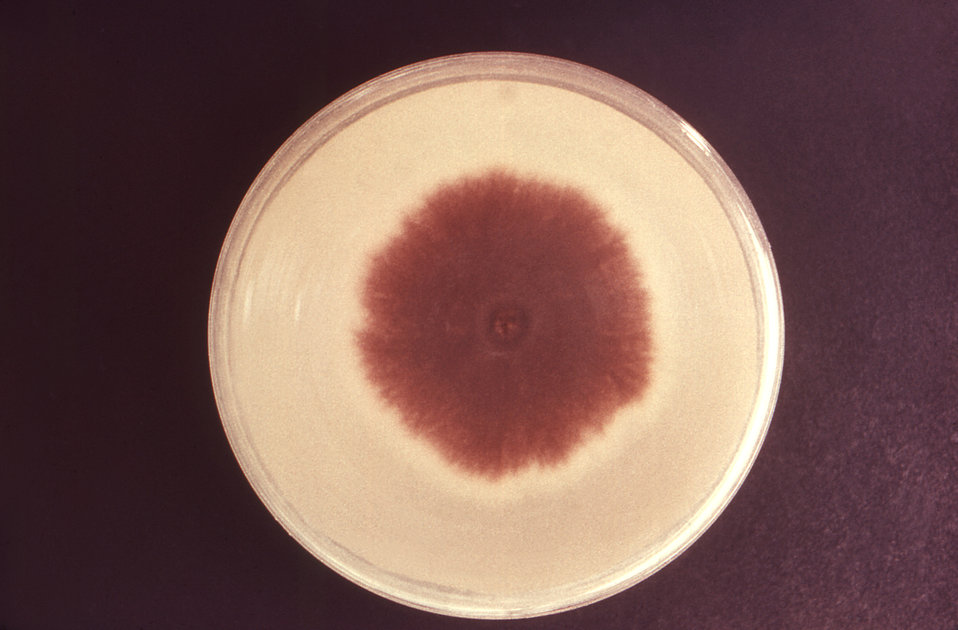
The Petri dish culture plate depicted here had been used to grow a colony of the dermatophytic fungus, Trichophyton mentagrophytes. Though the strain is unknown, it did produce a red pigment evidenced in this reverse view from the back.